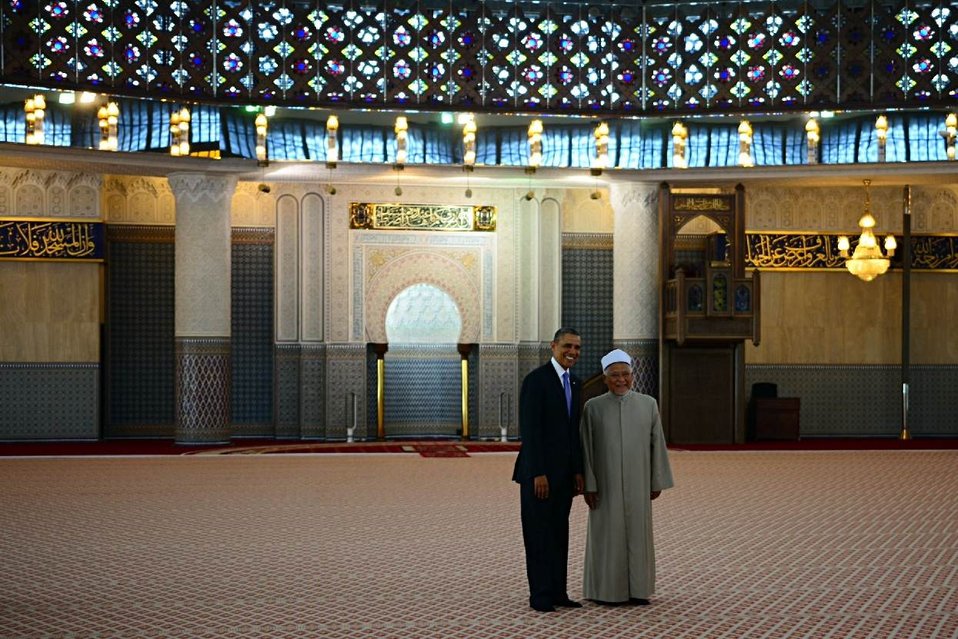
President Obama Visits the National Mosque of Malaysia

President Barack Obama visits the National Mosque of Malaysia in Kuala Lumpur, Malaysia on April 27, 2014.